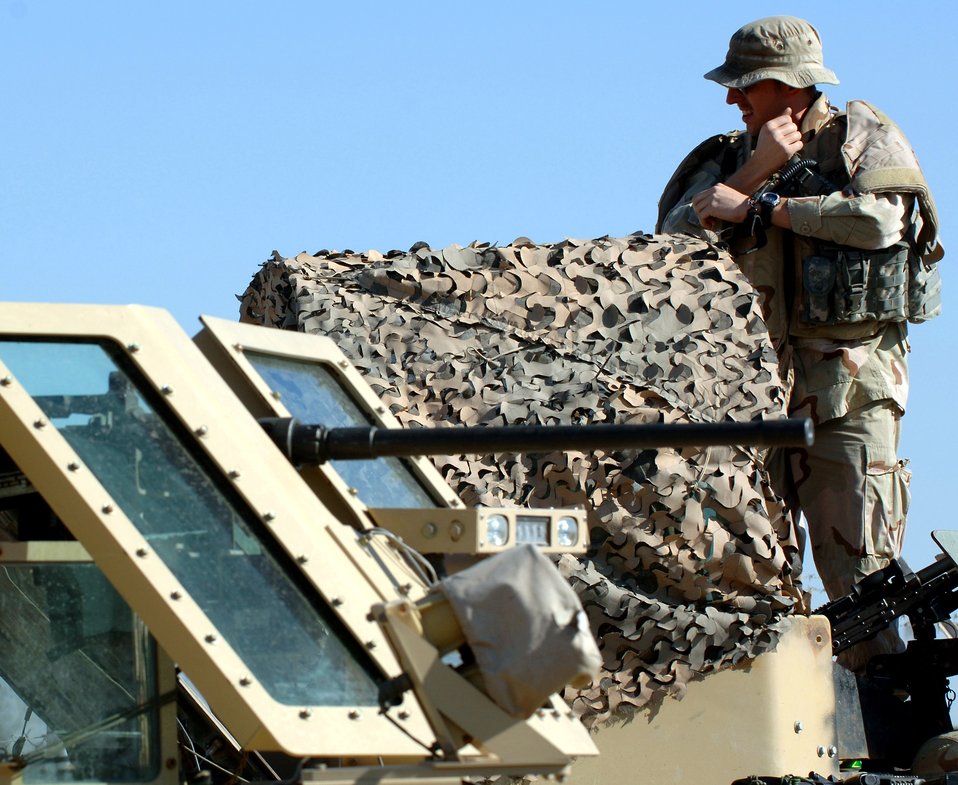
Little Rock Airman killed in Iraq

Staff Sgt. John Self adjusts his body armor before departing Camp Victory, Iraq, March 7. Sergeant Self, a security forces specialist deployed from the 314th Security Forces Squadron at Little Rock Air Force Base, Ark., was killed May 14 by a roadside bomb near Baghdad, Iraq.